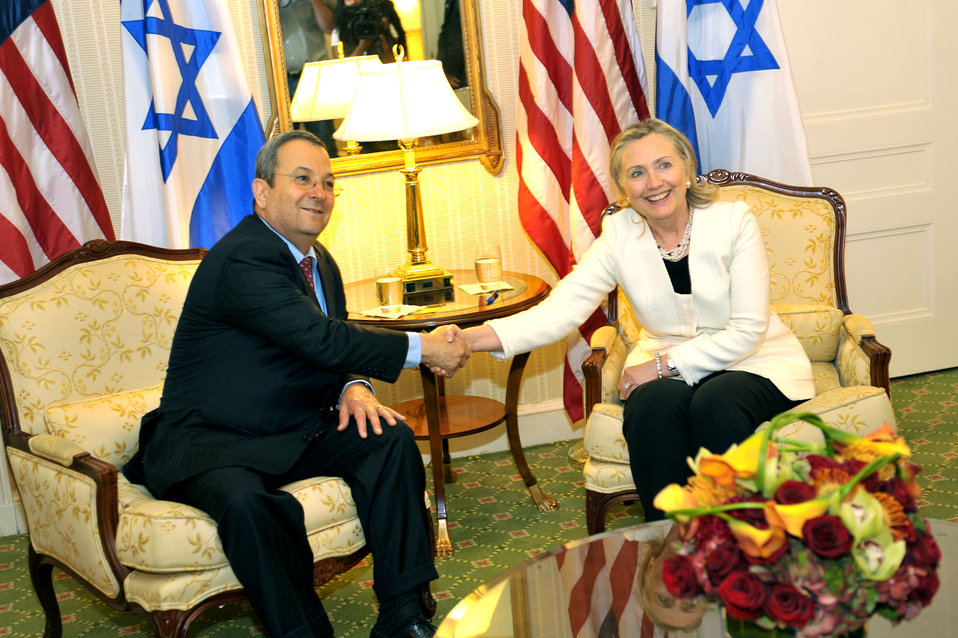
Secretary Clinton Holds a Bilateral Meeting With Israeli Defense Minister Barak

U.S. Secretary of State Hillary Rodham Clinton holds a bilateral meeting with Israeli Defense Minister Ehud Barak at the Waldorf Astoria in New York, New York, on September 20, 2010.